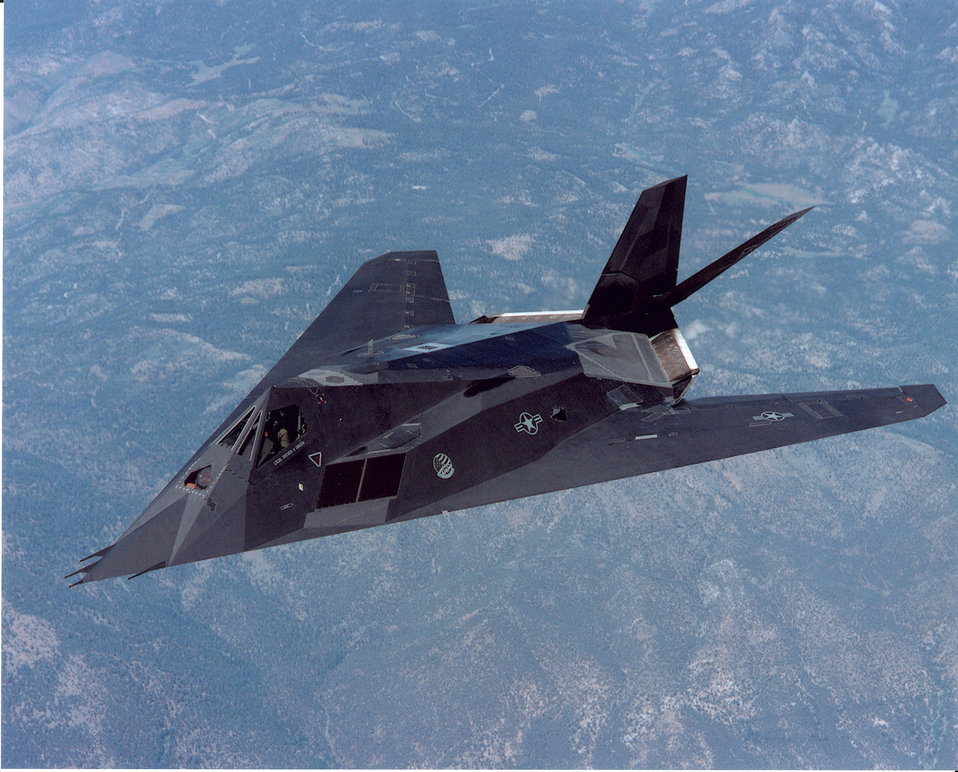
F-117 testing

In the early 1980s, the Air Force Flight Test Center teamed with Lockheed to complete the development test and evaluation of the F-117A stealth fighter.